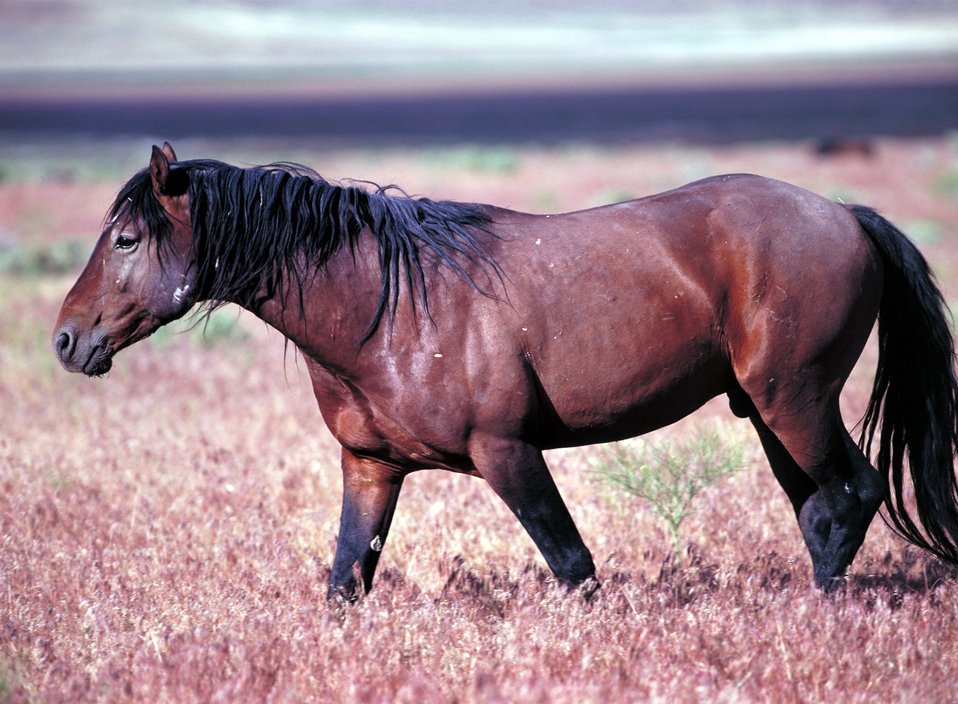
Onaqui Herd near Dugway, Utah.